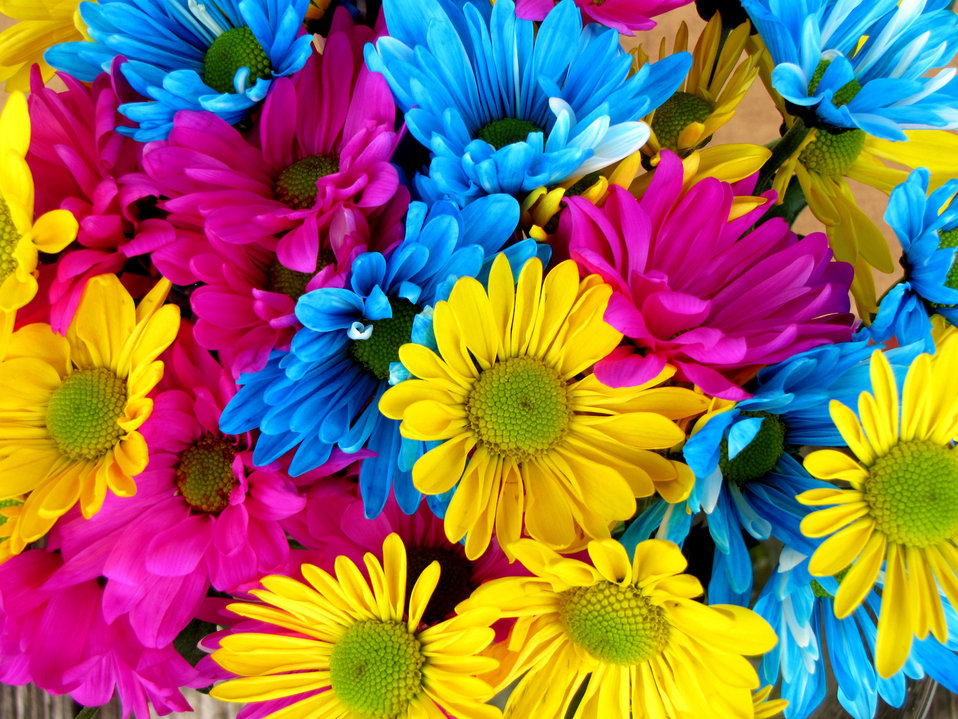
Daisies

Colorful daisies.